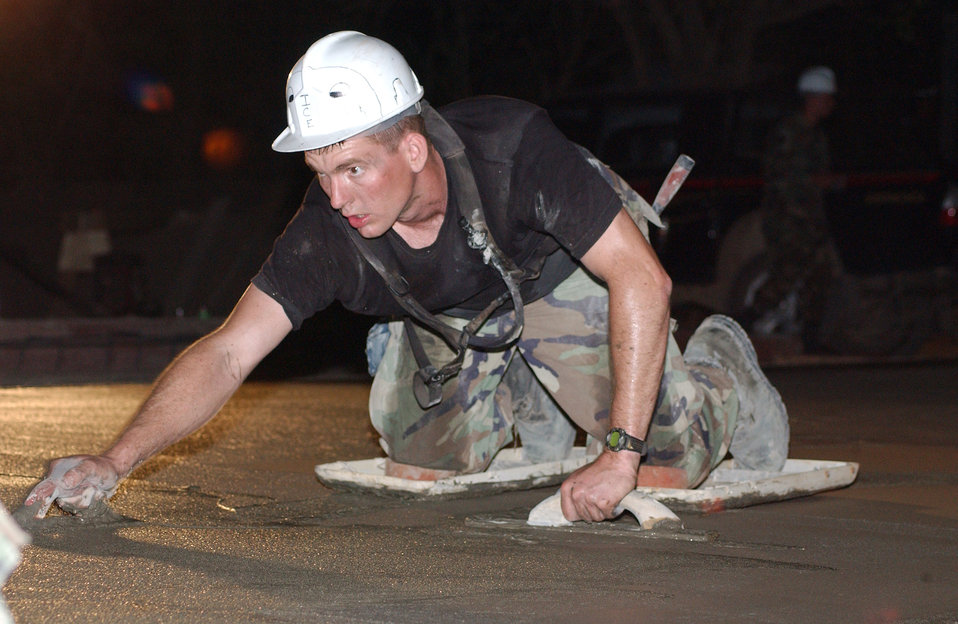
Airmen venture to New Horizons

LAS FLORES, El Salvador -- Senior Airman Phillip Ice finishes a concrete slab at a construction site here. Reserve Airmen from Wright-Patterson Air Force Base, Ohio, are here supporting New Horizons 2005, a readiness training exercise providing humanitarian-assistance projects to help citizens of El Salvador. The exercise hones the Airmen's skills as they build schools, clinics and other projects. Airman Ice is assigned to the 445th Civil Engineer Squadron.